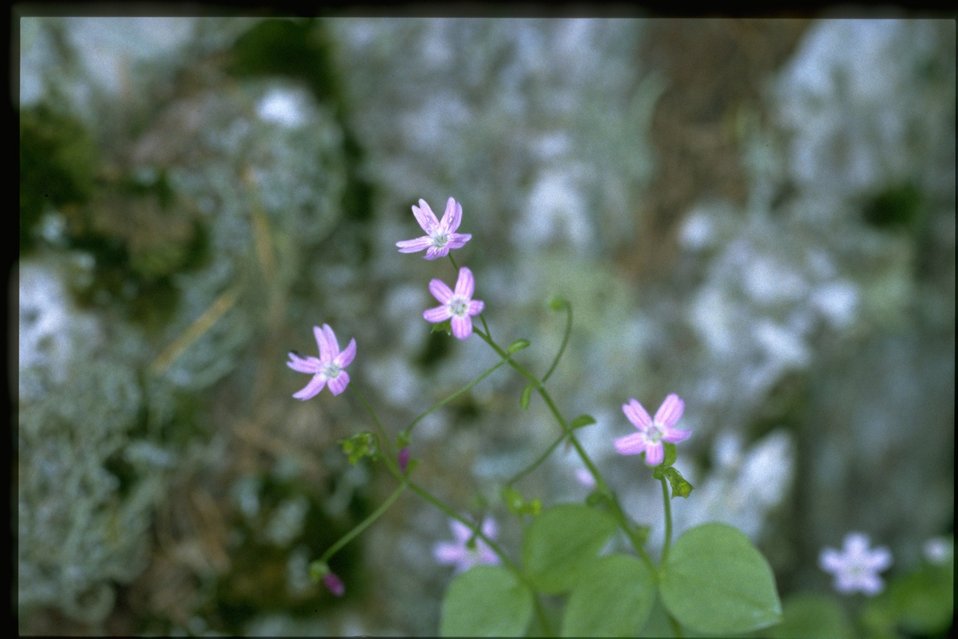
Medium shot of Claytonia sibirica.